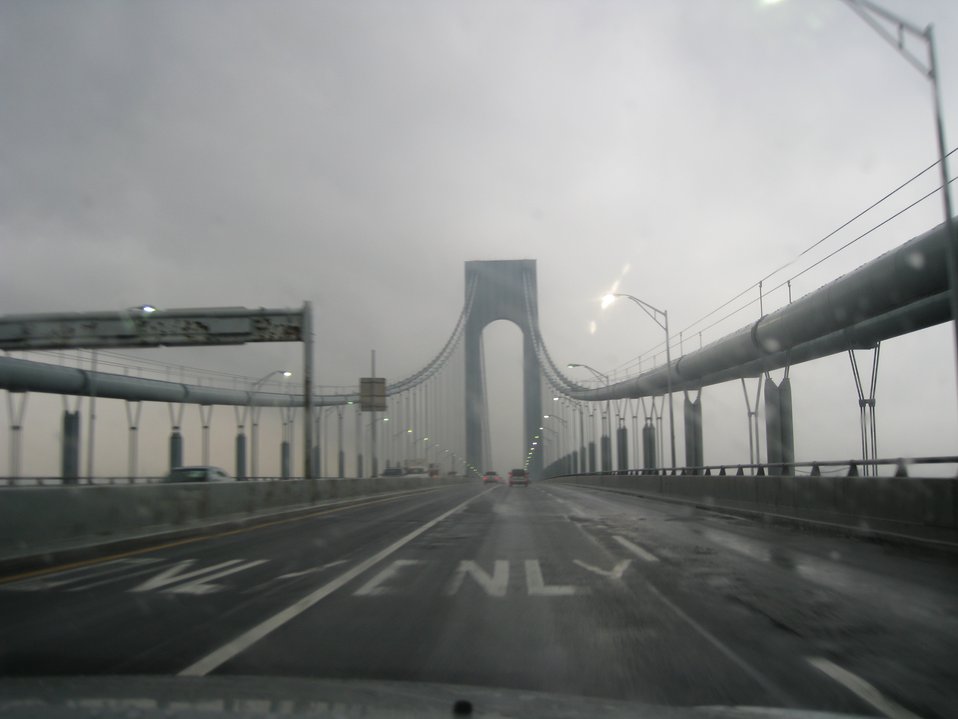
Crossing over Verrazano Narrows Bridge from Staten Island to Long Island.